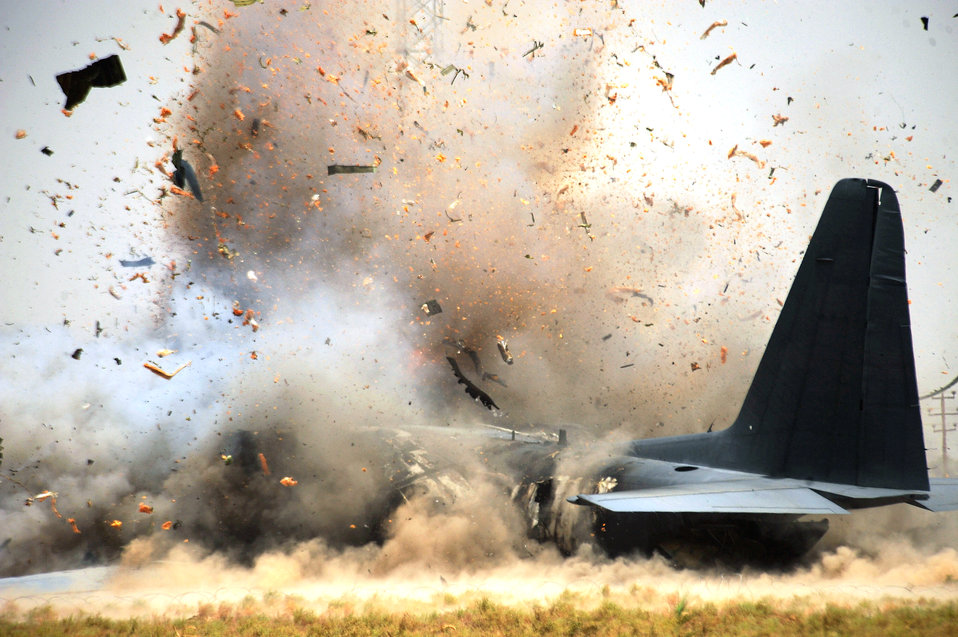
Controlled detonation

Civil engineers from Sather Air Base, Iraq, use controlled detonations July 7 to separate the forward section of a badly damaged C-130 Hercules so it can be moved. The C-130 made an emergency landing in a field north of Baghdad International Airport shortly after take-off June 27.